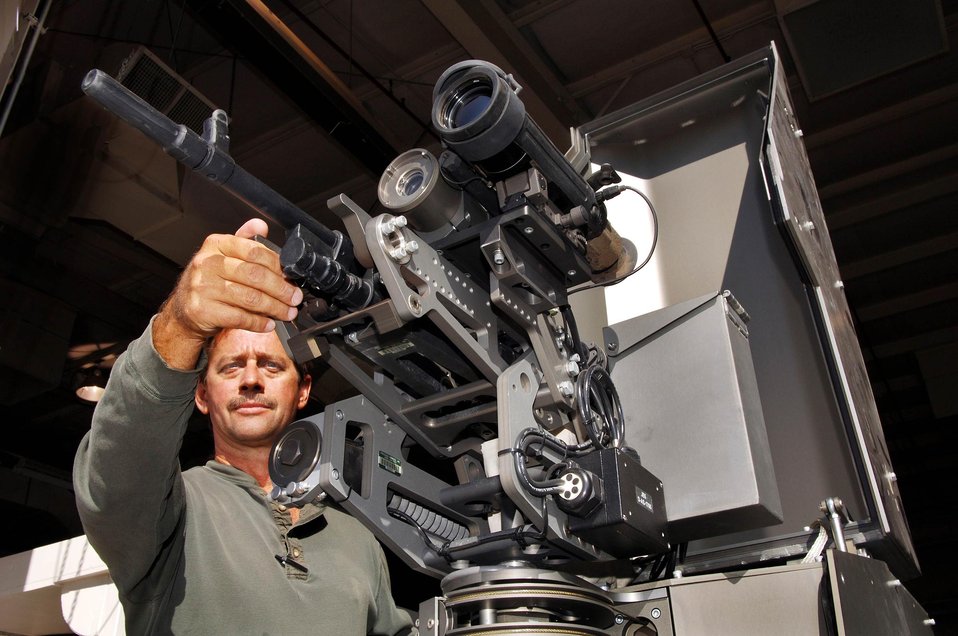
SHOWN IS THE REMOTELY OPERATED WEAPONS SYSTEMS (ROWS)

SANDIA NATIONAL LABORATORY LED THE COMPLETION OF THE ROWS AT OAK RIDGE'S Y-12 PLANT AND A U.S. AIR FORCE INSTALLATION. THIS SYSTEM HAS THE ABILITY TO RESPOND MULTIPLE THREATS AND LOCATIONS FROM ONE COMMAND CENTER AND INCREASE FIREPOWER WITH REDUCED COSTS, WITH ACCURACIES THAT APPROACH AND SOMETIMES EXCEED THOSE OF HUMANS.